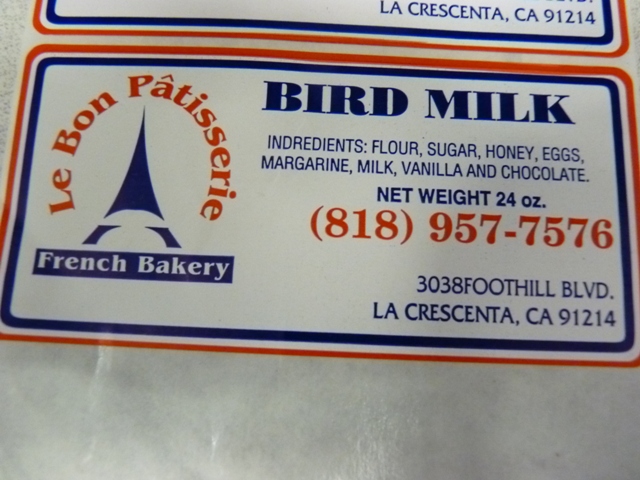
RECALLED - Pastry Products

April 5, 2011 – Product Recall – Le Bon Patissiere-2, Inc. Announces Voluntary Recall On Select Le Bon Patissiere Products That Contain Undeclared Allergens.